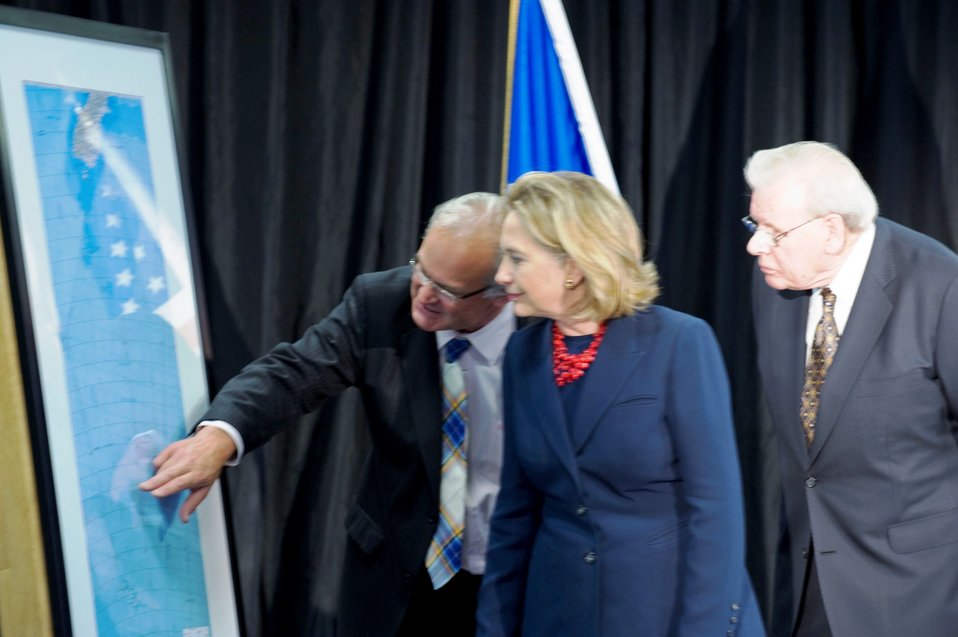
Secretary Clinton, Rob Fenwick, and Art Brown View the Waystation Chart

U.S. Secretary of State Hillary Rodham Clinton; Rob Fenwick (left), Chair of Antarctica New Zealand; and Art Brown (right), the Christchurch-based representative of the National Science Foundation, view the waystation chart at an event with the U.S. Antarctic Center and Antarctica New Zealand in Christchurch, New Zealand, on November 5, 2010.